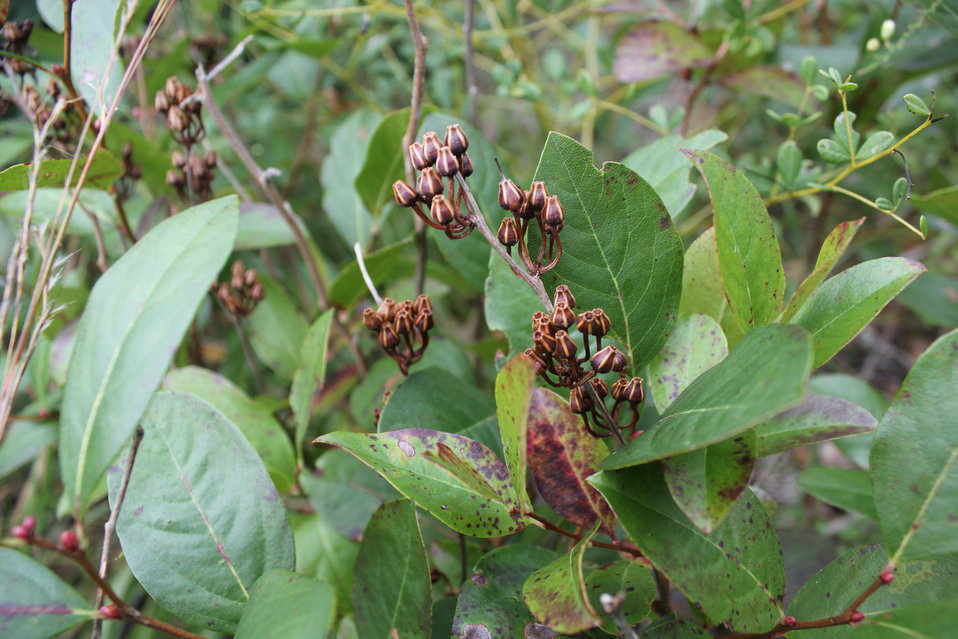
Staggerbush

Photographed at Wertheim National Wildlife Refuge.